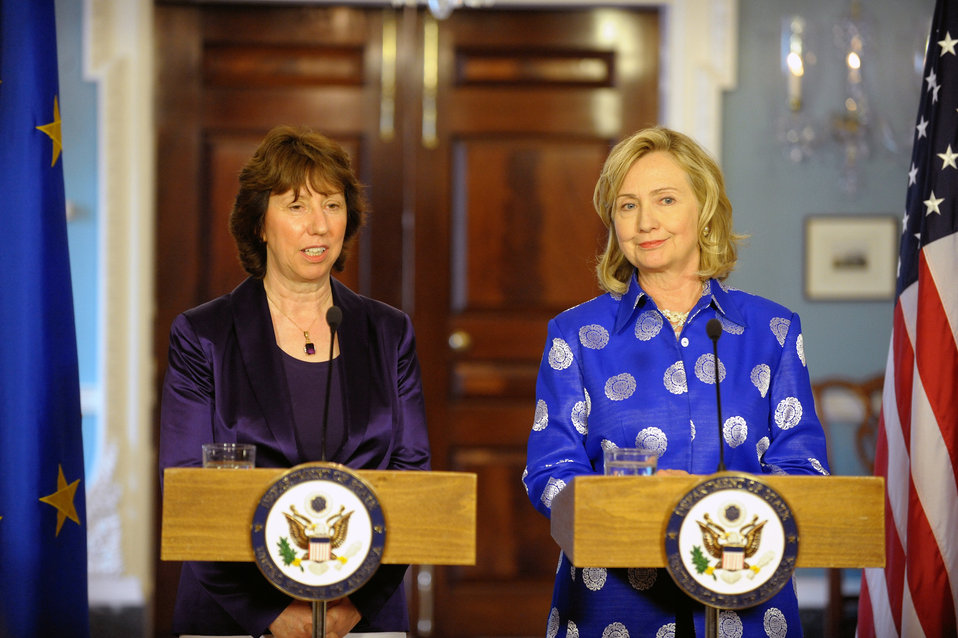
Secretary Clinton and EU High Representative Ashton Hold a Joint Press Conference

U.S. Secretary of State Hillary Rodham Clinton and EU High Representative for Foreign Policy Catherine Ashton hold a press conference at bilateral meetings at the U.S. Department of State in Washington, D.C., on July 11, 2011.